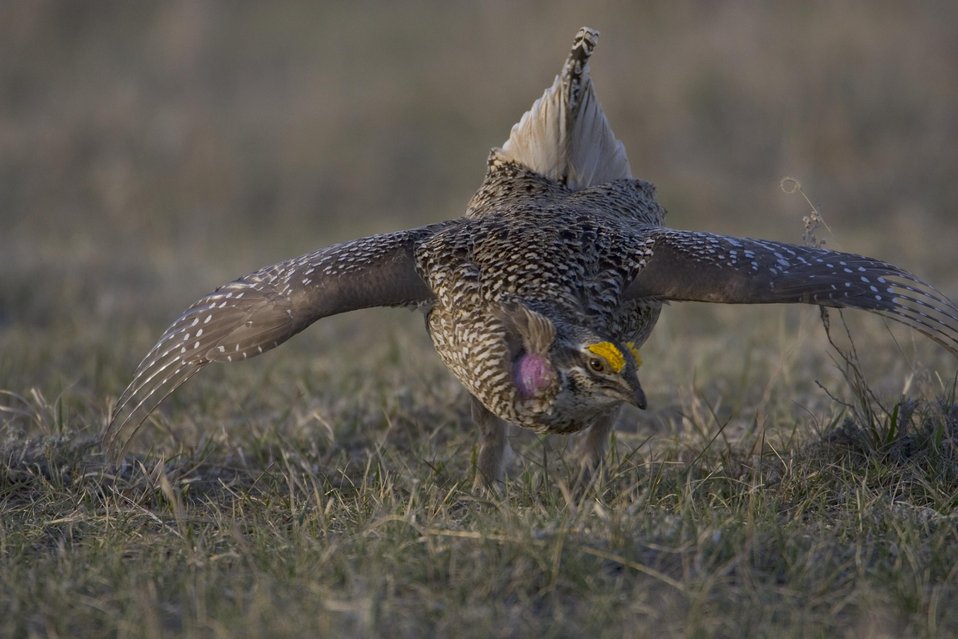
Sharp-tailed Grouse

Charles M. Russell National Wildlife Refuge was established, in part, for sharp-tailed grouse. The males display on dancing grounds called 'leks' in the spring.